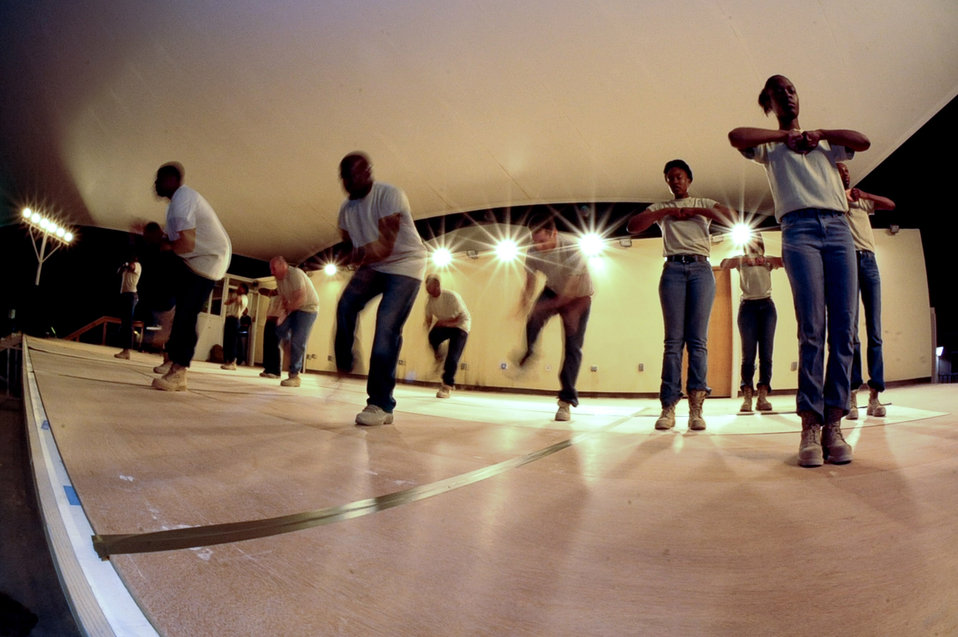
Step it up

Members of a base Step team perform a Step routine during a special edition Karaoke Review in celebration of African American History month in Southwest Asia Feb. 15. The team comprised of various coalition servicemembers performed several step-dance routines. This version of step-dancing or